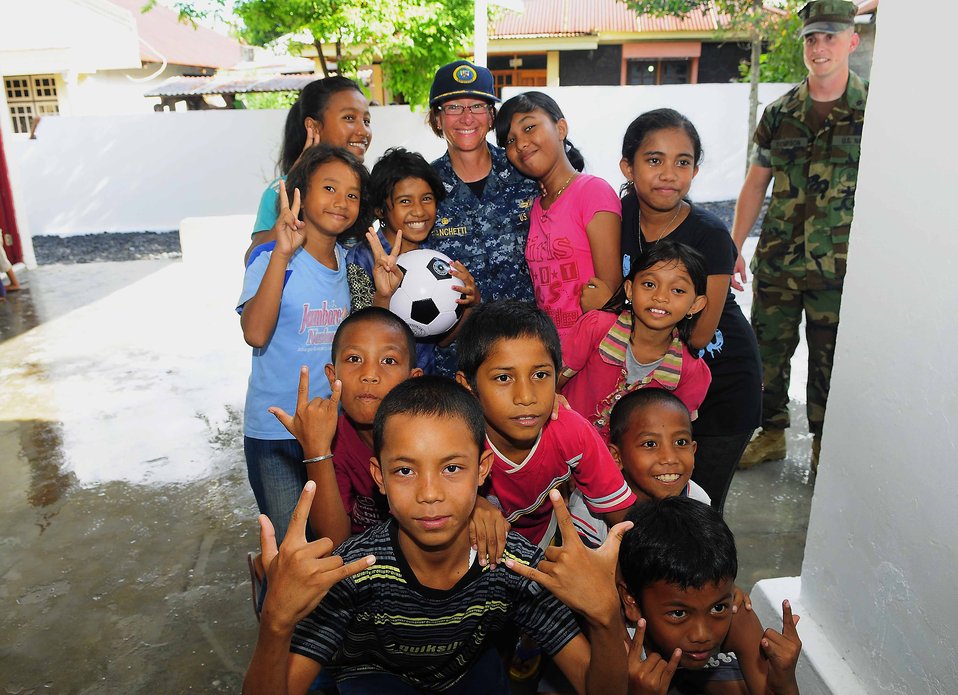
PP 2010 Commander Capt. Franchetti Poses for a Photo With Indonesian Children

Pacific Partnership 2010 Commander Capt. Lisa M. Franchetti poses for a photo with several Indonesian children during her visit to an engineering civic action program on July 23, 2010, in Ternate, Indonesia. Pacific Partnership 2010 is the fifth in a series of annual U.S. Pacific Fleet endeavors conducted in Indonesia as a disaster relief exercise aimed at strengthening regional partnerships.